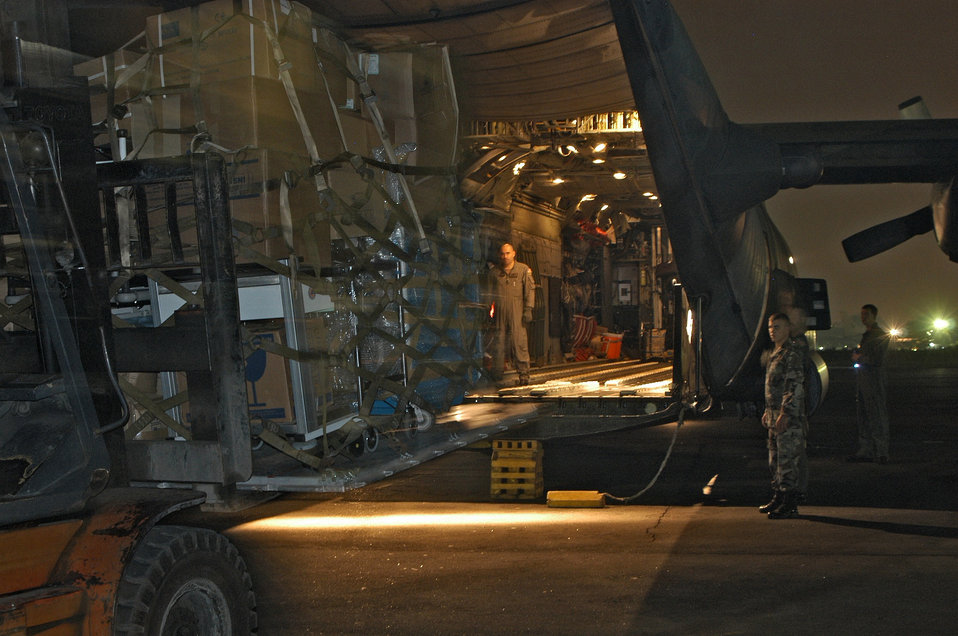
Airmen put relief on target

MEDAN, Indonesia -- A loadmaster guides a forklift into position here during a load of humanitarian supplies. The aircraft made two deliveries into the tsunami-battered region of Banda Aceh on Jan. 8. Another MC-130H Combat Talon II crew from the 353rd Special Operations group made two additional deliveries.